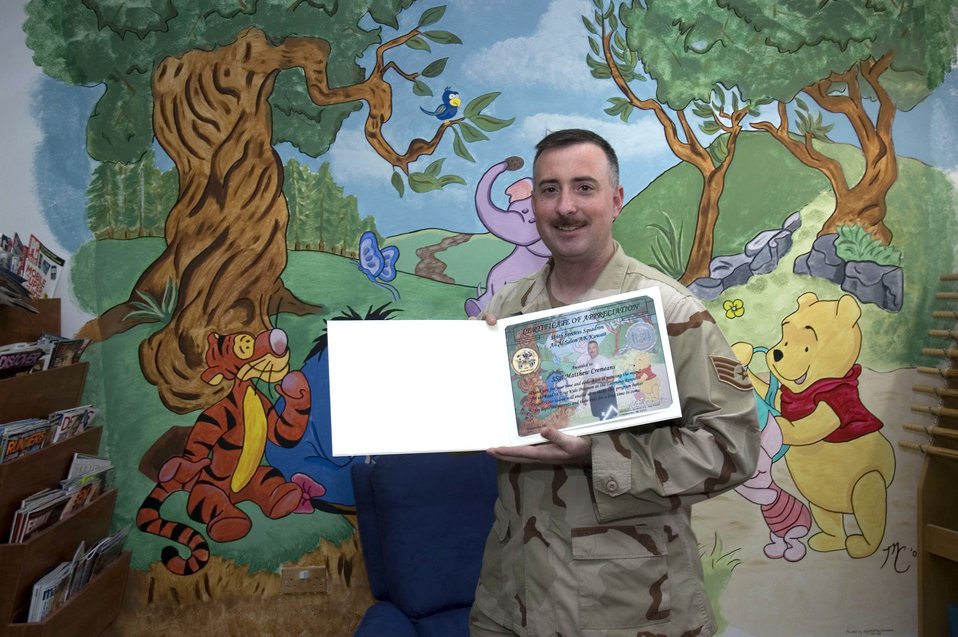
NCO puts artistic talents to work while deployed

Staff Sgt. Matthew Cremeans holds a certificate of appreciation he received Sept 15 for the mural he painted at the Learning Resource Center at his deployed location in Southwest Asia. The mural, depicting Winnie the Pooh and friends, took over 40 hours to complete. Sergeant Cremeans is the 386th Air Expeditionary Wing consolidated toll kit NCO in charge.